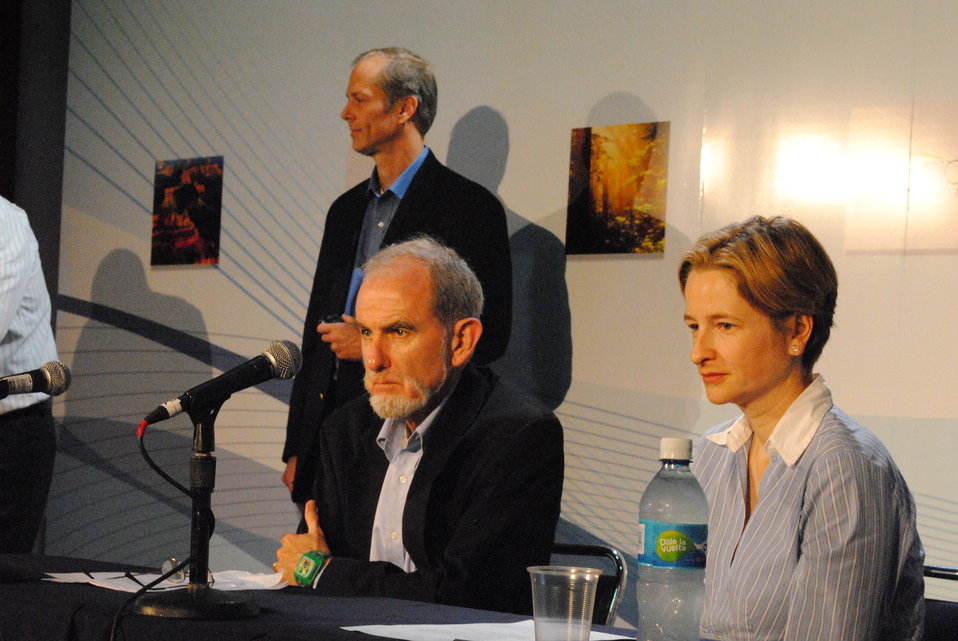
Jacqueline Cochran and Fellow Panelists Respond to Questions

Jacqueline Cochran of the National Renewable Energy Lab (right) and another panelist respond to questions during the 'OpenEI Platform' side event at the U.S. Center at COP-16 in Cancun, Mexico, on December 1, 2010.